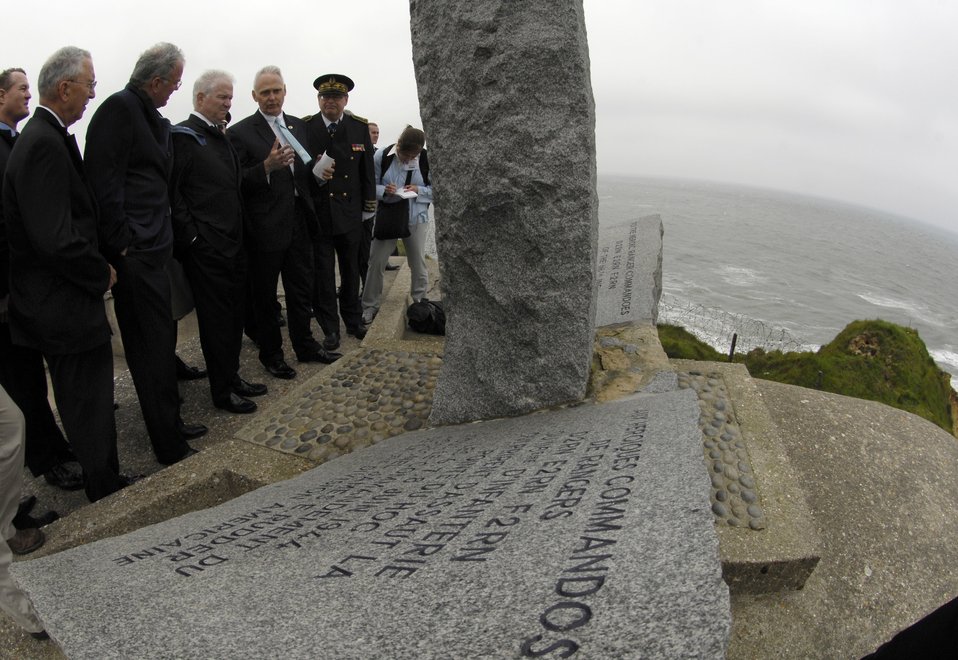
Defense secretary, servicemembers reflect on D-Day heroism

Secretary of Defense Robert M. Gates tours Point-du-Hoc on the 63rd Anniversary of D-Day June 6 in Normandy, France. During World War II, rangers assulted the beaches at Point-du-Hoc and scaled the 100-meter-high cliffs to defeat the enemy for the cause of freedom.